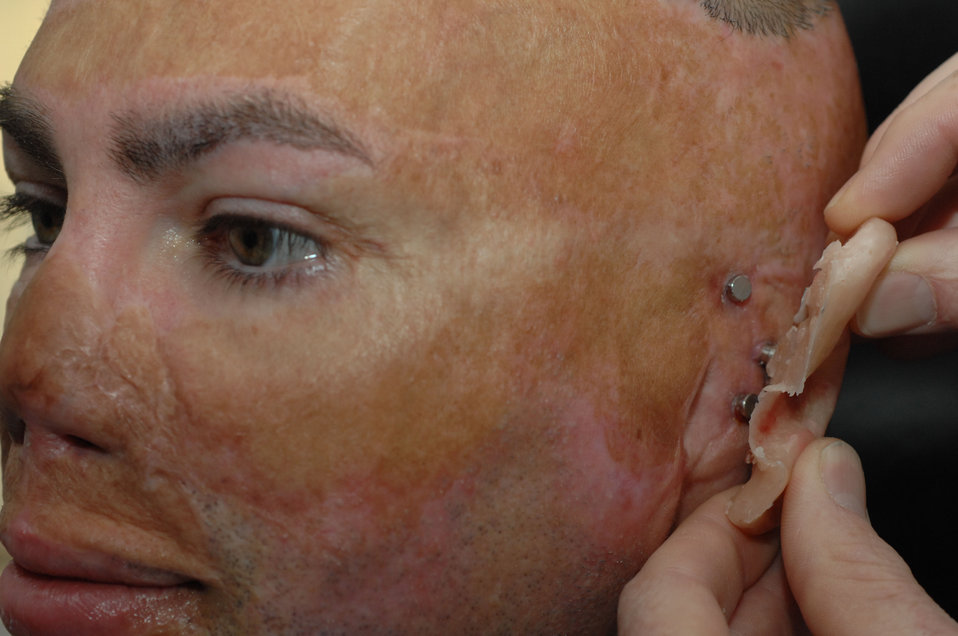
Wounded warrior gets perfect fit

Retired Army Staff Sgt. Shilo Harris is fitted for prosthetic ears Oct. 5, 2010, at Wilford Hall Medical Center, Lackland Air Force Base, Texas. A wax model of the ear is molded first to ensure proper placement and fit before applying the prosthetic. The Maxillofacial Prosthetics Department at WHMC employs a team that deals with the rehabilitation of patients with acquired and congenital defects of the head and neck region. They are one of only a few in the Department of Defense that creates prosthetic body parts, such as eyes, ears and noses.